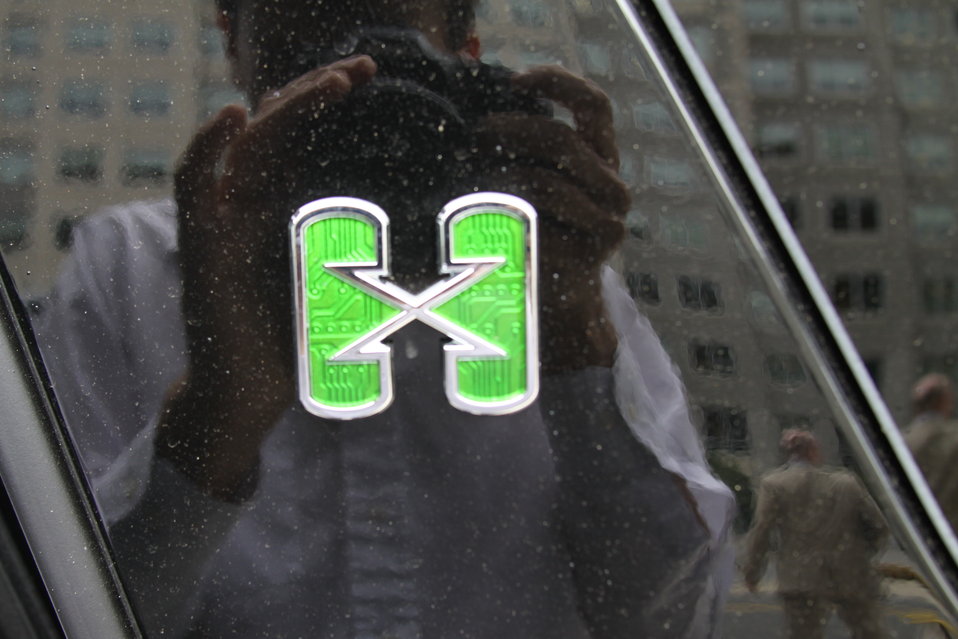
Tahoes 021